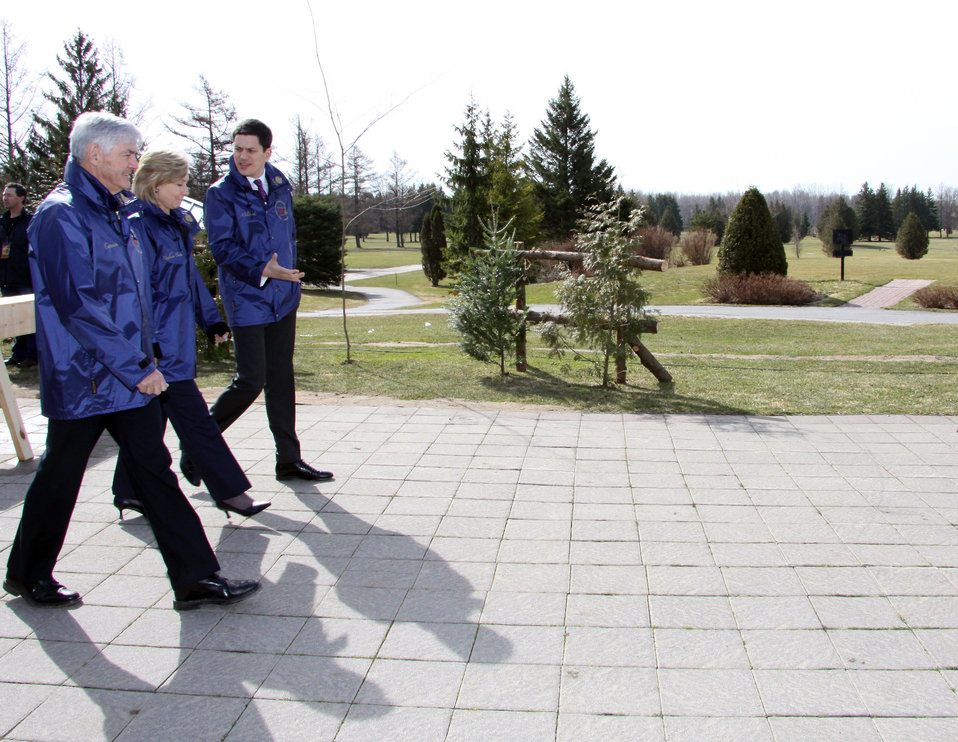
Secretary Clinton With G8 Leaders in Ottawa

U.S. Secretary of State Hillary Rodham Clinton walks outside with Canadian Foreign Minister Lawrence Cannon and U.K. Foreign Minister David Miliband during the G8 Foreign Ministers Meeting in Ottawa, Canada March 29, 2010.